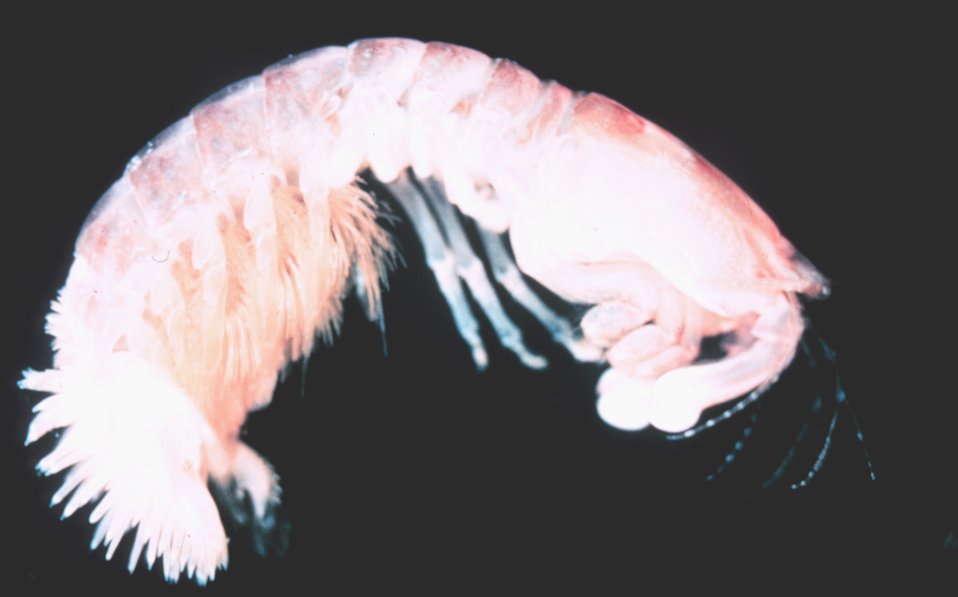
Zooplankton - amphipod